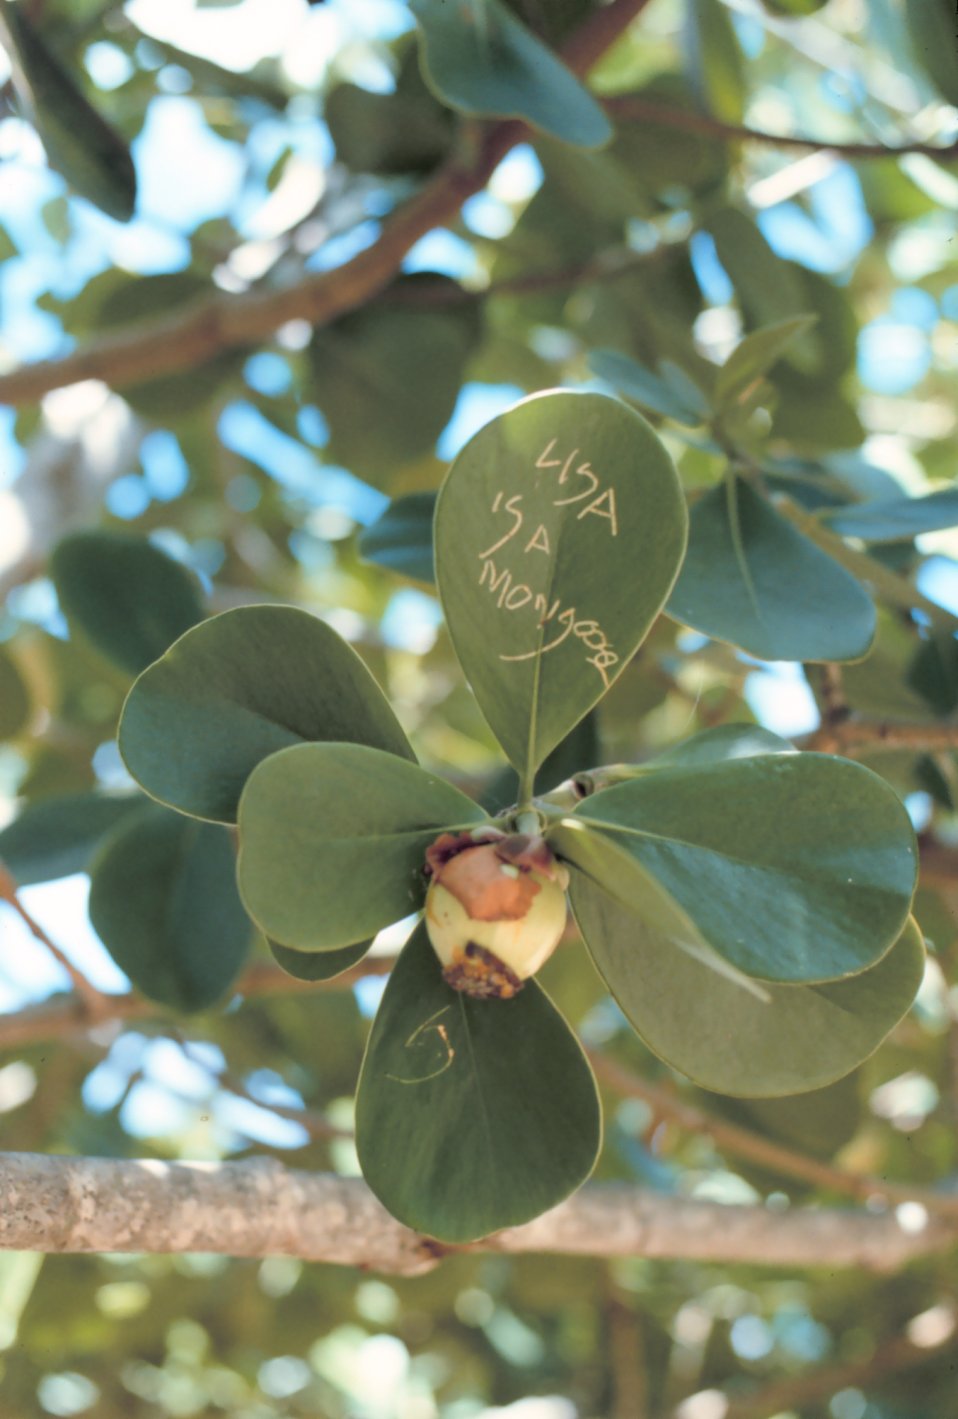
Carving initials and messages in these type of leaves is popular among locals.